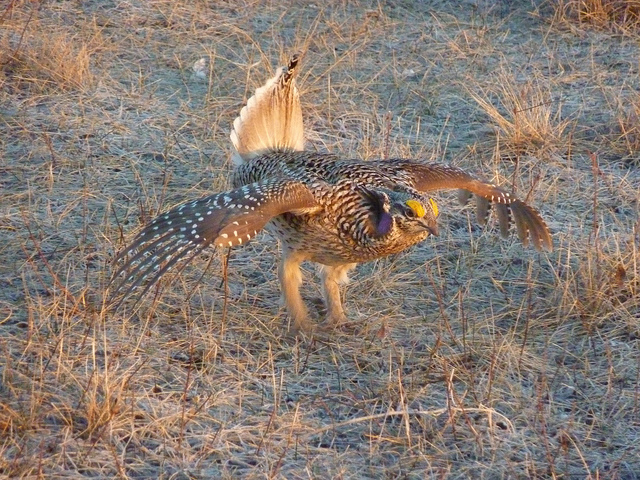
sharp-tailed grouse

Upper Souris National Wildlife Refuge, ND